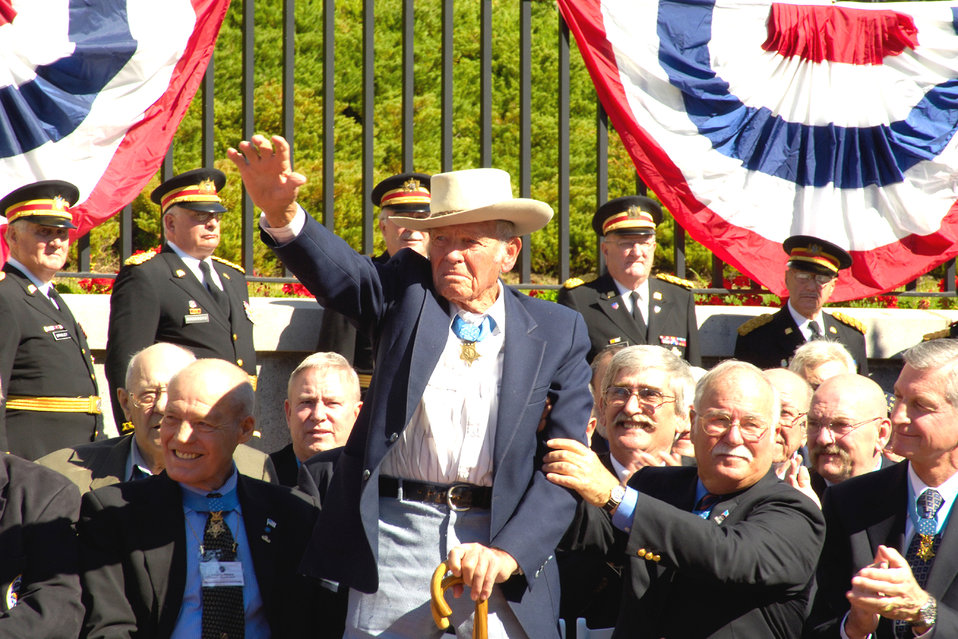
Medal of Honor recipients honored in Boston

Retired Navy Lieutenant John L. Finn, the oldest living Medal of Honor recipient, recently turned 96 years old. He joined more than 70 other Medal of Honor recipients at a special ceremony at the State House in Boston Sept. 27. It has been nearly 65 years since he earned his medal, a chief petty officer at the time, while defending the Kaneohe Bay Naval Air Station during the first attack on Pearl Harbor, Dec. 7, 1941.